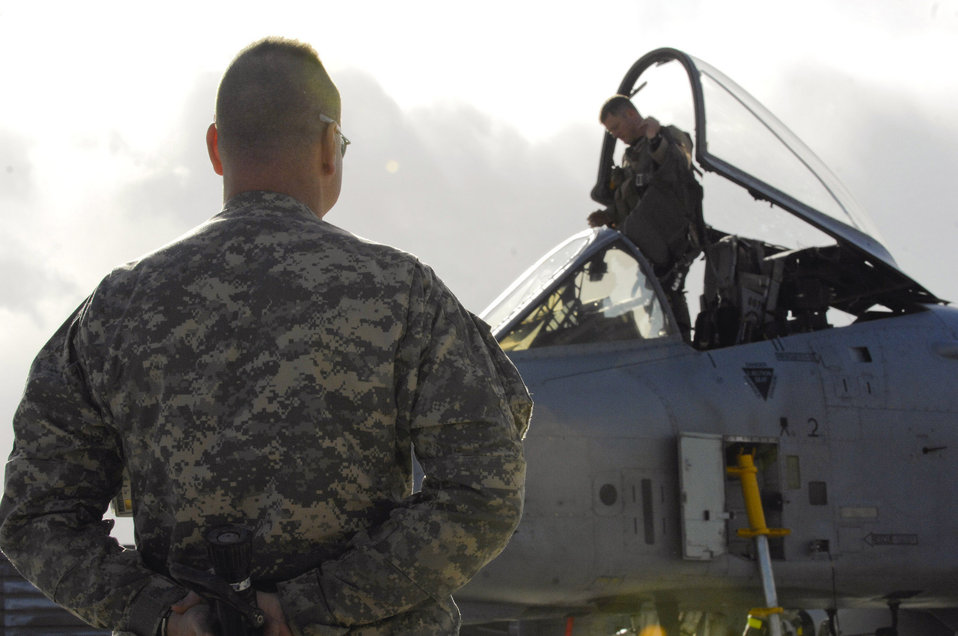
A-10 unit reaches 10,000-hour milestone

Army Lt. Col. George Chizmar hides a fire hose behind his back as Lt. Col. Sam Milam prepares to disembark an A-10 Thunderbolt II after logging his unit's 10,000th combat flight during a single deployment rotation Feb. 24 at Bagram Airfield, Afghanistan. Members of the 75th EFS arrived here in September for a four-month deployment, but was extended to six months. Colonel Chizmar is the ground liason officer, and Colonel Milam is the 75th Expeditionary Fighter Squadron commander.